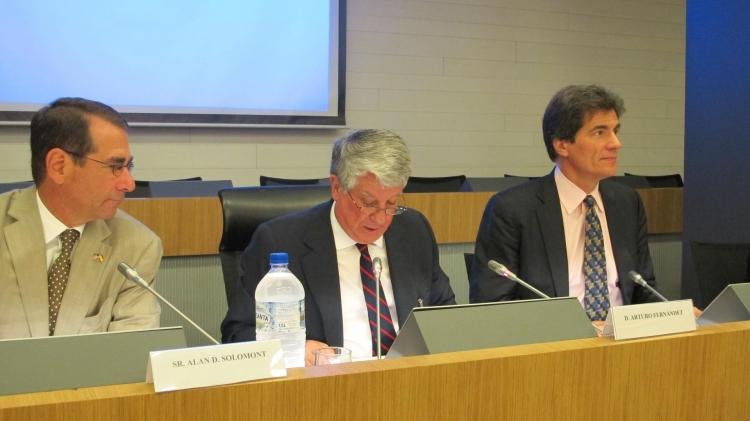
Assistant Secretary Fernandez Delivers the Opening Remarks at the Spain-U.S. Latino Business Forum

Assistant Secretary of State for Economic, Energy and Business Affairs Jose W. Fernandez delivers the opening remarks at the Spain-U.S. Latino Business Forum in Madrid, Spain, on September 30, 2011. Also pictured in the photo, left to right, are: U.S. Ambassador to Spain Alan D. Solomont and Arturo Fernandez, President of Spain’s Entrepreneurs Council.